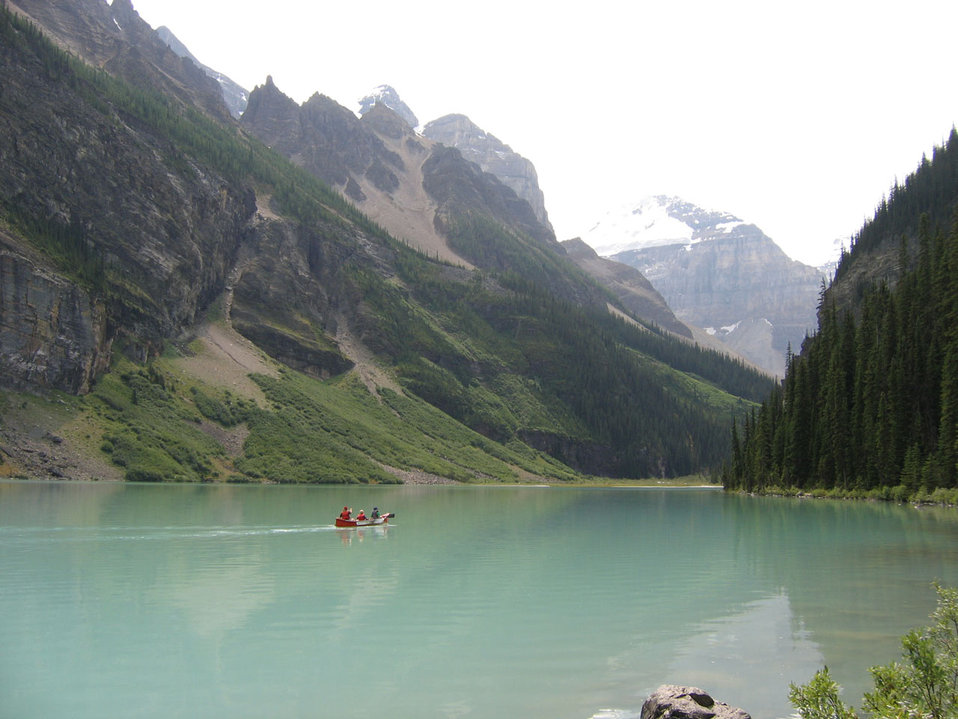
Lake louise

Canoeing on lake louise.